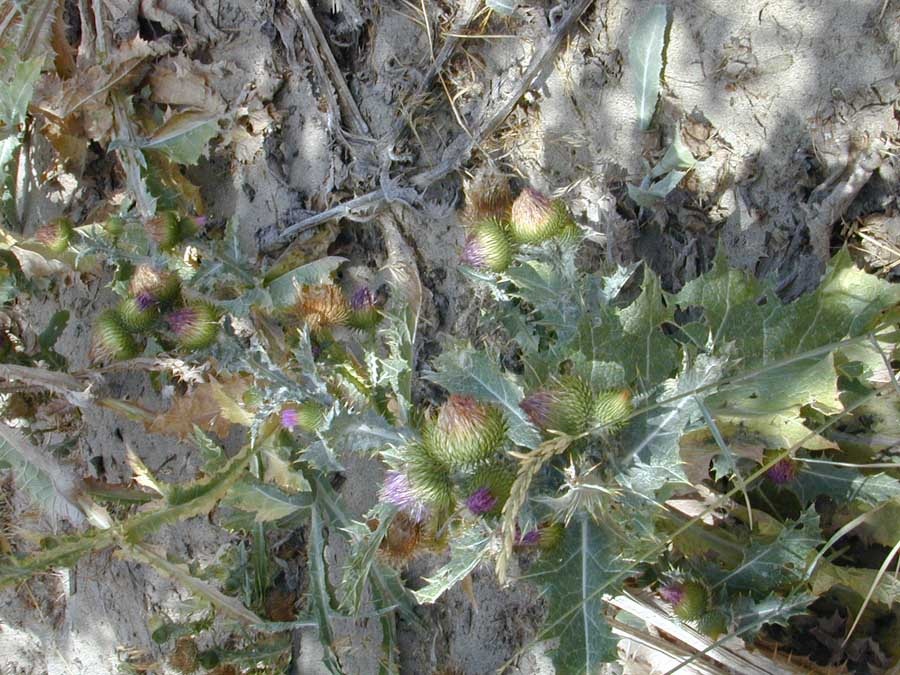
Sage Brush Idaho vegetation Plants in BLM